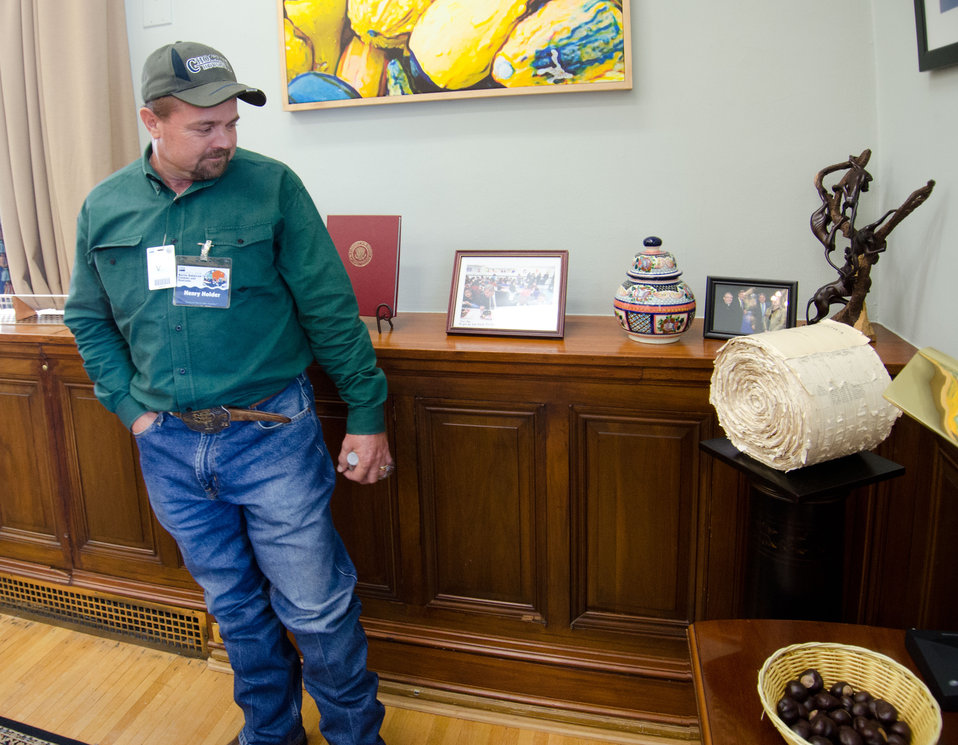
Farmer/Rancher Henry Holder of the Choctaw Nation, in Soper, OK, takes a look at a scrool from Iowa that resembles rolled hay, during a break of the first administrative/training meeting of the U.S. Department of Agriculture's (USDA) Council for Native American Farming and Ranching (CNAFR) held on Monday, Aug. 13, 2012 at the USDA headquarters Whitten Building, in Washington, D.C. CNAFR was created to advise the Secretary on ways to eliminate barriers to participation for Native American Farmers and Ranchers in USDA programs. The Council was established as part of the Keepseagle settlement, and is conducted under the oversight of USDA's Office of Tribal Relations, which is part of the Office of the Secretary of Agriculture. The Director of Tribal Relations Joanna Mounce Stancil serves as Designated Federal Official (DFO) for the Council.